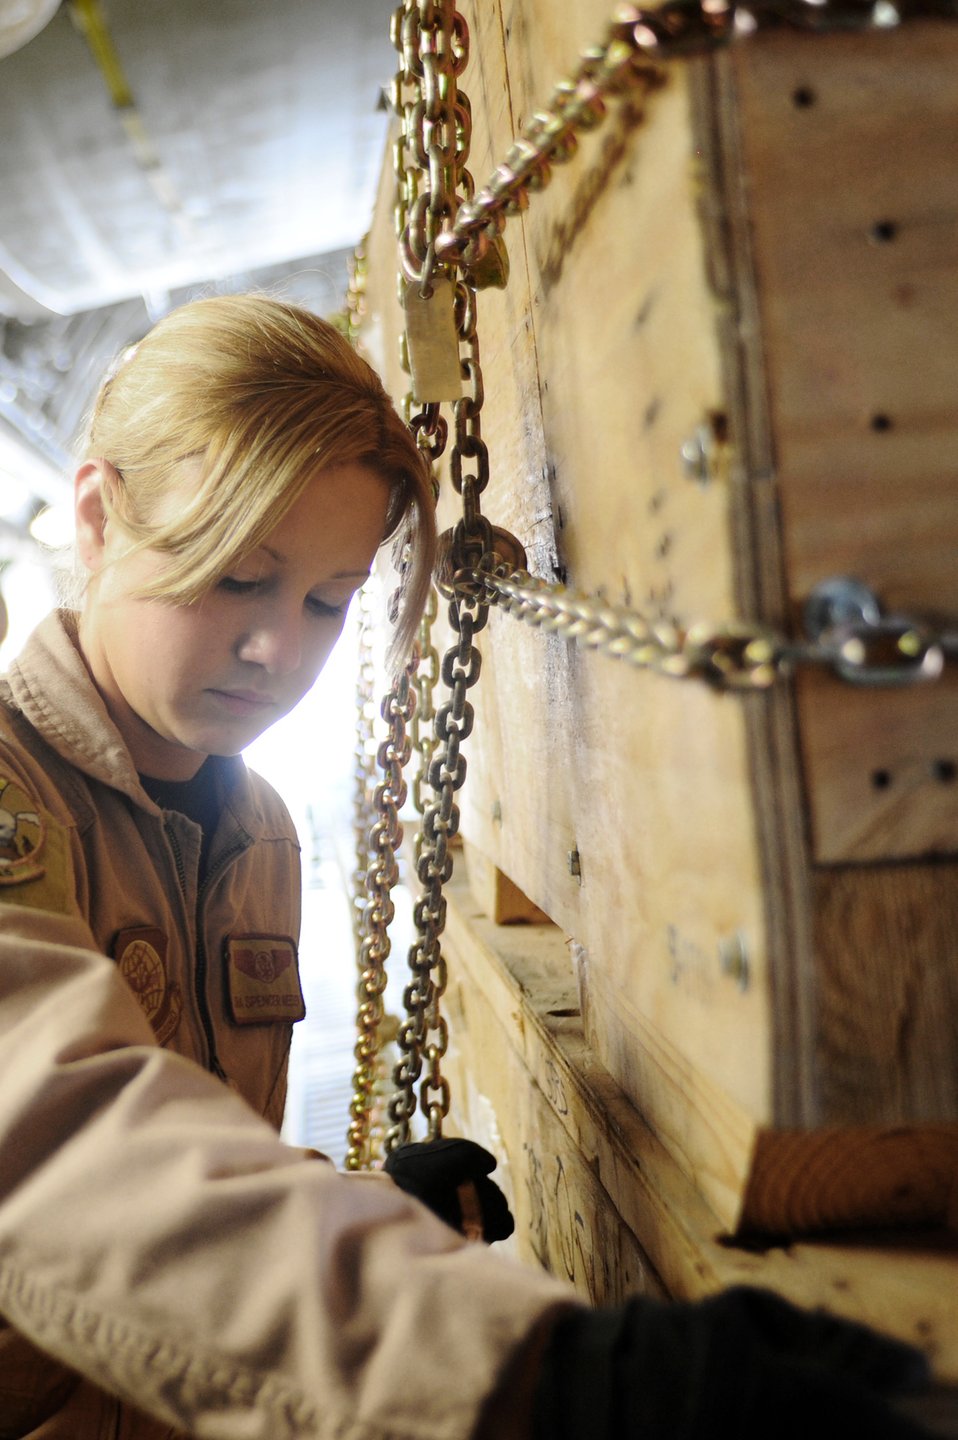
C-17 flight commemorates Women's History Month

Senior Airman Spencer Keeley, 816th Expeditionary Airlift Squadron loadmaster, loads a pallet on a C-17 Globemaster III March 10, 2010, at an air base in Southwest Asia. Airman Keeley was part of an all-female crew in honor of Women's History Month and is deployed from the 14th Airlift Squadron at Charleston Air Force Base, S.C.